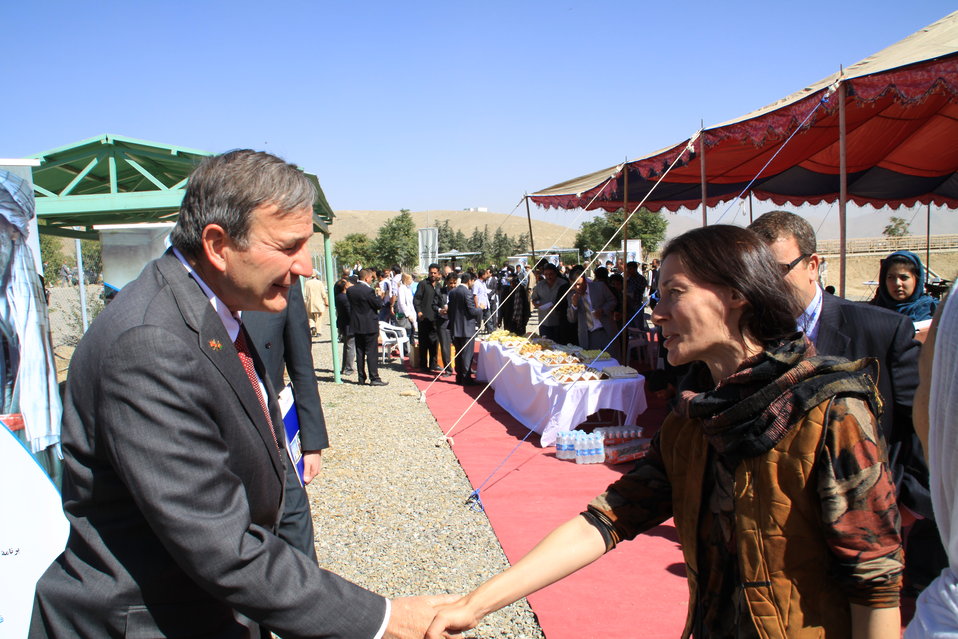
AVIPA Plus Wheat Seed Distribution 101005

US Ambassador Karl Eikenberry and USAID Acting Mission Director Kevin Brownawell joined the Minister of Agriculture, Irrigation and Livestock, H.E. Minister Mohammed Rahimi in signing a Memorandum of Understanding and distributing vouchers to area farmers for wheat and fertilizer.

US Ambassador Karl Eikenberry and USAID Acting Mission Director Kevin Brownawell joined the Minister of Agriculture, Irrigation and Livestock, H.E. Minister Mohammed Rahimi in signing a Memorandum of Understanding and distributing vouchers to area farmers for wheat and fertilizer.

US Ambassador Karl Eikenberry and USAID Acting Mission Director Kevin Brownawell joined the Minister of Agriculture, Irrigation and Livestock, H.E. Minister Mohammed Rahimi in signing a Memorandum of Understanding and distributing vouchers to area farmers for wheat and fertilizer.